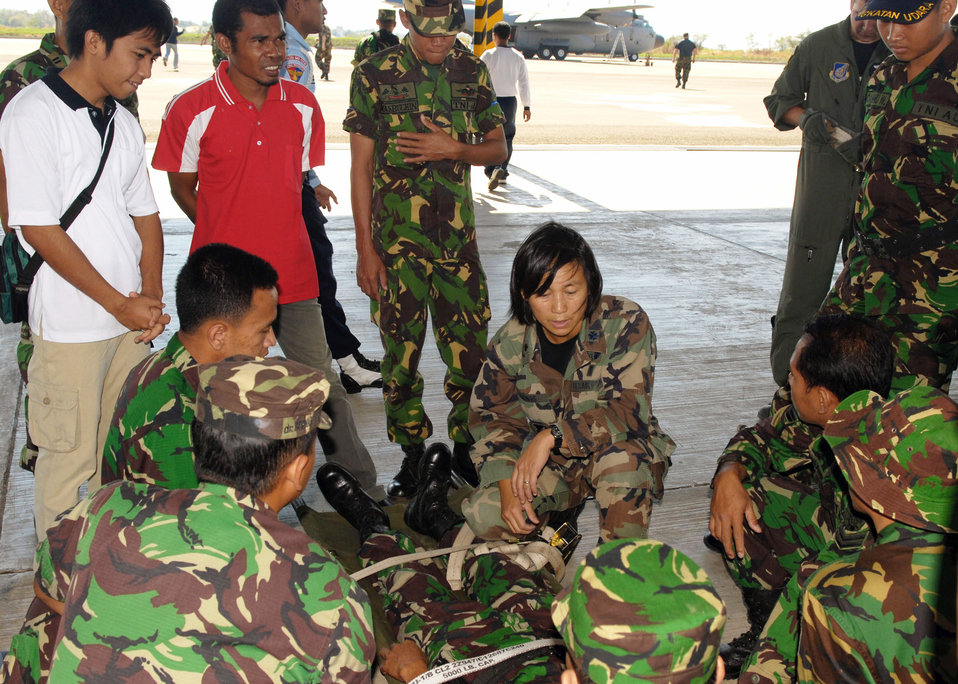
Aeromedical evacuation knowledge shared in Indonesia

Lt. Col. Peerach Ewings goes over litter transport techniques July 19 at El Tari Air Force Base, Indonesia. U.S. Airmen in Indonesia as part of Operation Pacific Angel 2009 practiced loading patients with the Indonesian military and local doctors. Colonel Ewings is an international health specialist assigned to the 13th Air Force at Hickam Air Force Base, Hawaii.